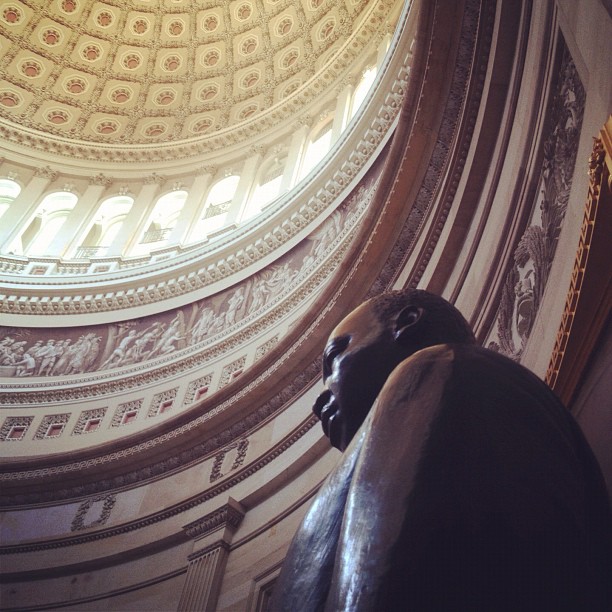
Dr. Martin Luther King, Jr. in the Capitol Rotunda.